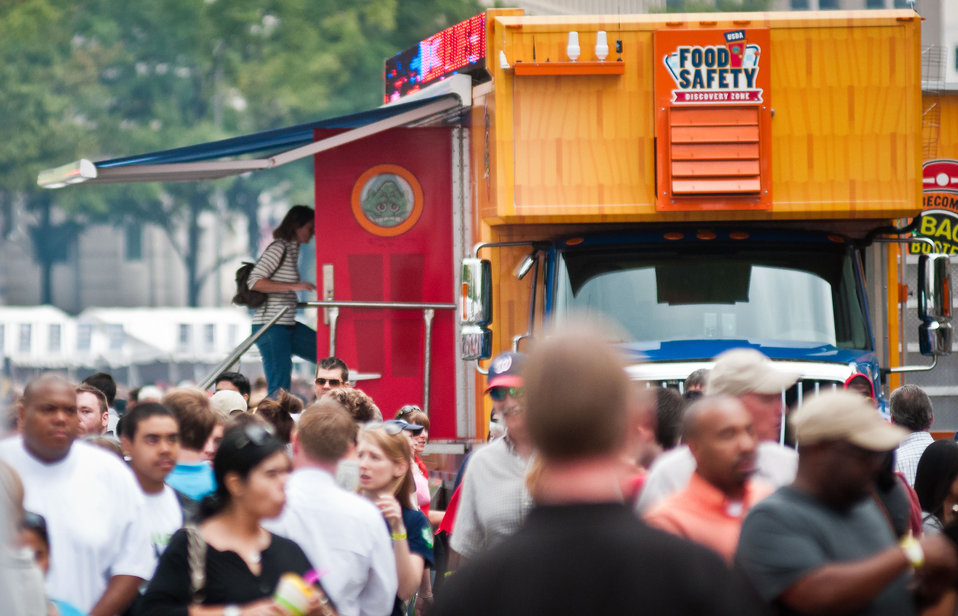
Agriculture’s mobile Discovery Zone is a hands-on vehicle that travels the nation educating children and parents about the four main principals of home food safety – clean, separate, cook and chill, at the Taste of D.C., event that highlights more than 70 eateries, 30 specialty beer providers, the United Service Organization (USO) Metropolitan Washington, and live bands. It is anticipated that more than 500,000 people will attend over the course of the three-day event, which extends from the White House to the Capitol, along Pennsylvania Ave. in Washington D.C. on Saturday, October 6, 2012. Agriculture Food Safety and Inspection Service specialists present talks and cooking demonstrations.